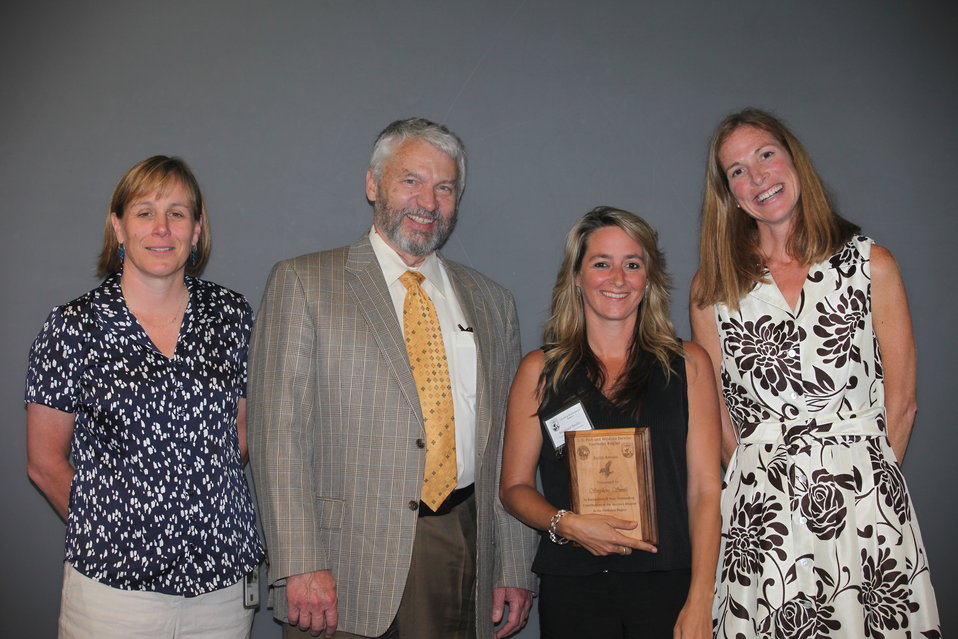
Stephani Smith

Stepheni Smith, Information Technology Management, received the Eagle Award.
From left to right: Deputy Regional Director Deb Rocque, Deputy Director Rowan Gould, Stepheni Smith, and Regional Director Wendi Weber